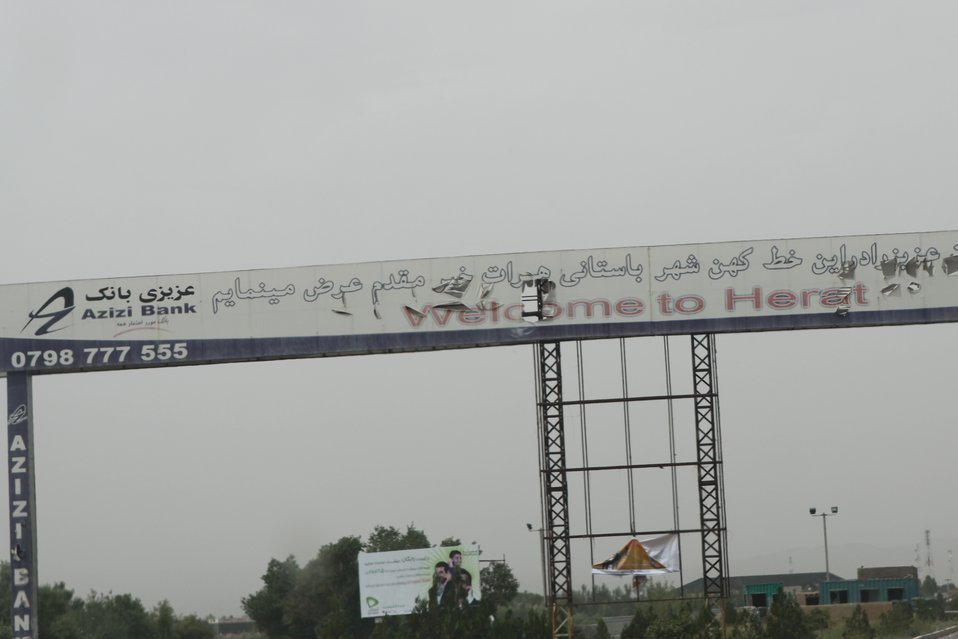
100525 Hirat Marble Conference 571